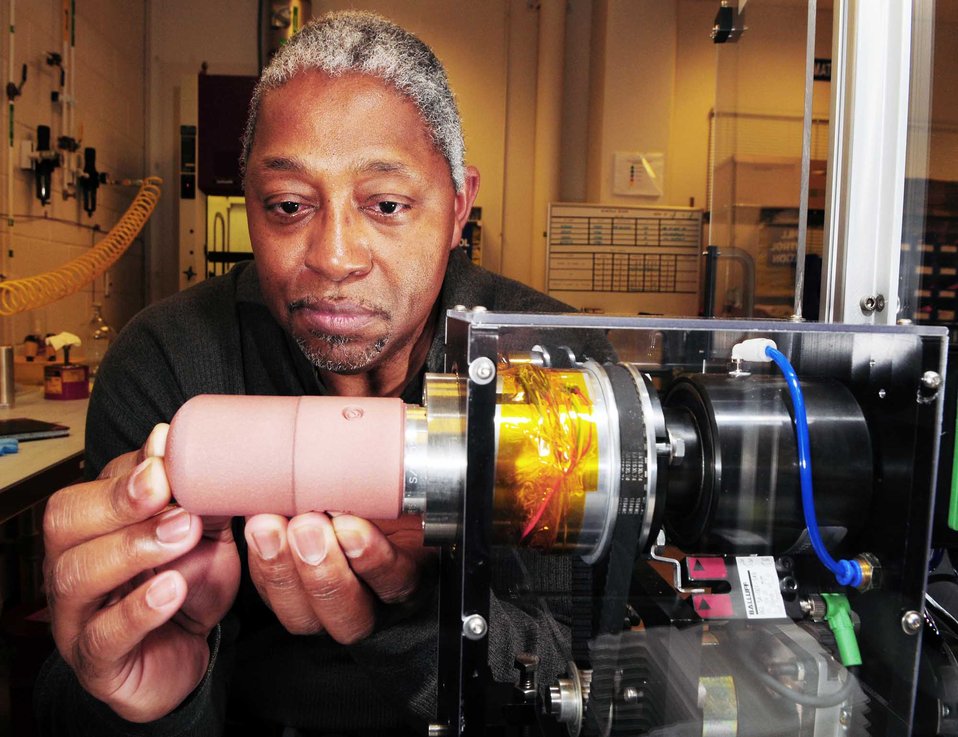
The CAVE at INL Center for Advanced Energy Studies was developed in the 1990s by researchers at the Electronic Visualization Laboratory at the University of Illinois-Chicago.